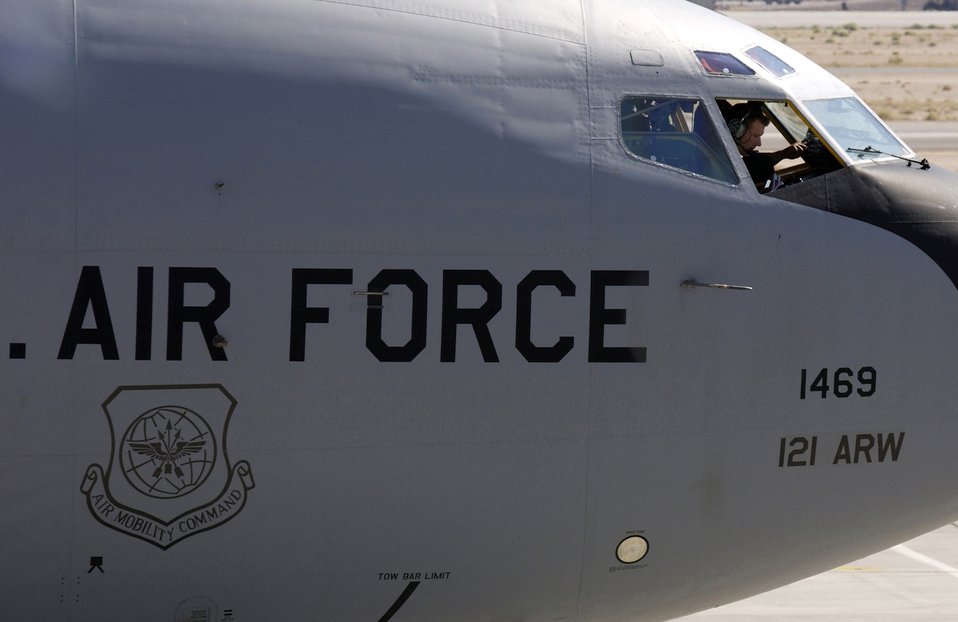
Airmen hone skills at Red Flag

KC-135 Stratotanker pilots perform cockpit set-up before take-off Oct. 19 at Red Flag 07-1 at Nellis Air Force Base, Nev.